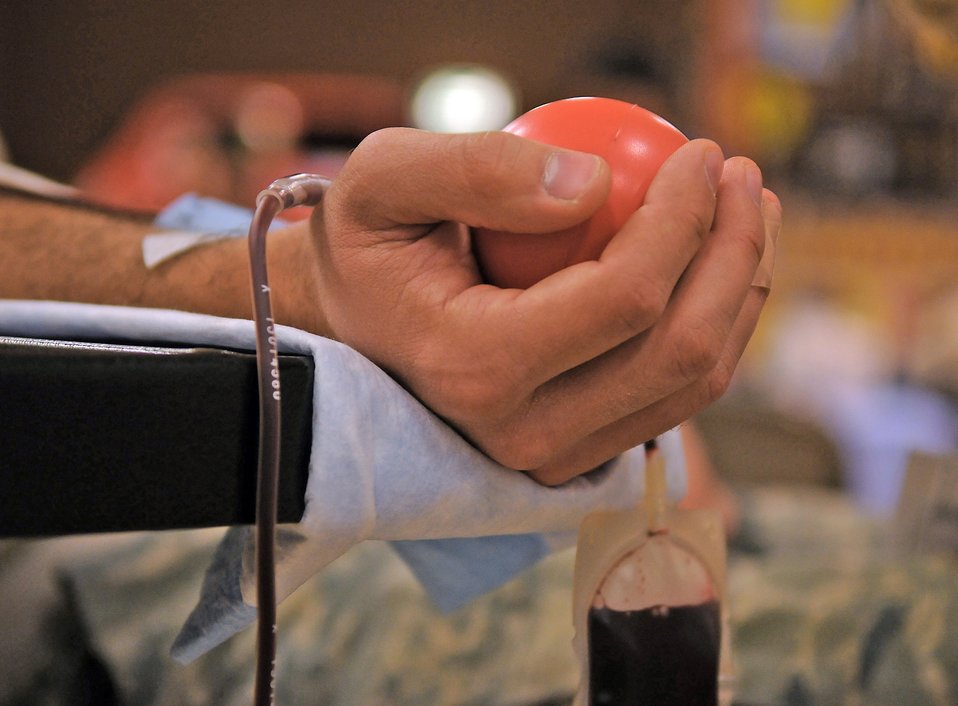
For a good cause

2nd Lt. Gregory Stafford tries to relax while donating blood Dec. 2, 2009, at Spangdahlem Air Base, Germany. Airmen here donated blood for the Armed Services Blood Bank Center-Europe to provide blood products for servicemembers and their families around the world. Lieutenant Stafford is from the 52nd Communications Squadron.